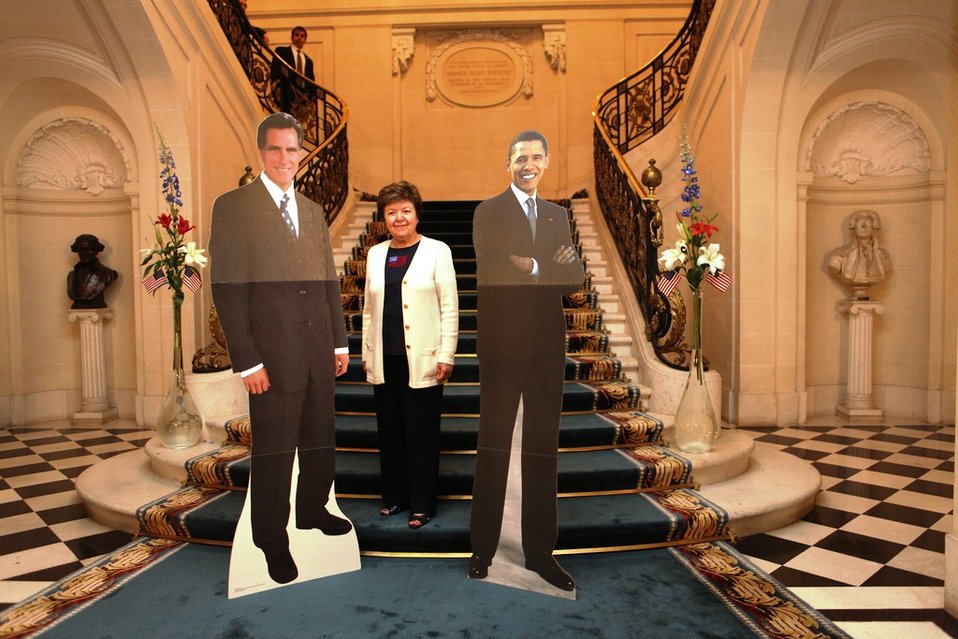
Ambassador Martinez Poses for a Photo With Cutouts of the Candidates

U.S. Ambassador to Argentina Vilma Martinez poses for a photo with cutouts of the 2012 presidential candidates at the Embassy's 2012 Election Night event in Buenos Aires, Argentina, November 6, 2012.